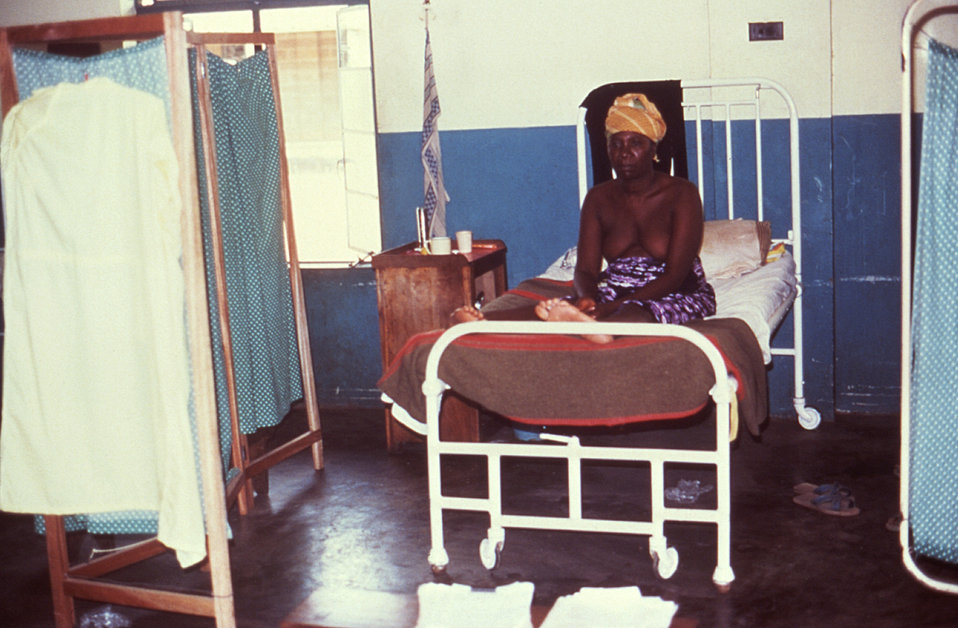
This is a 1977 image depicting a recovering female Lassa fever patient in Segbwema, Sierra Leone.